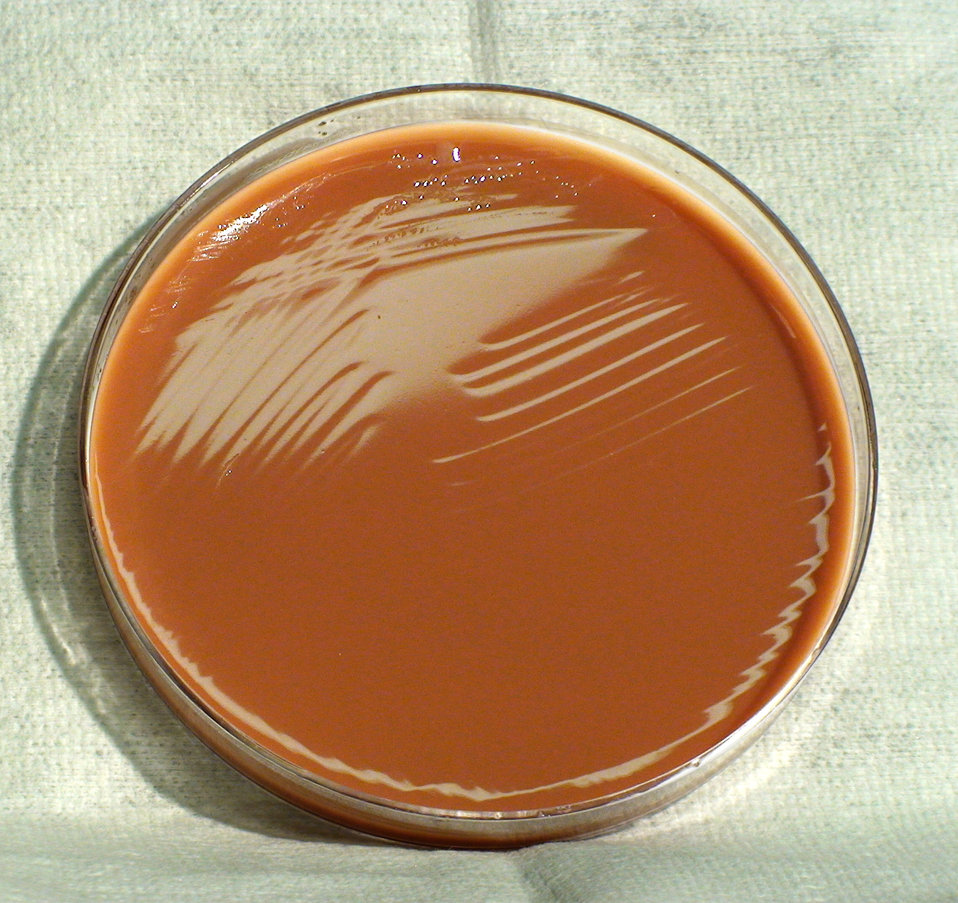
This photograph depicts the colonial morphology displayed by Gram-negative Francisella tularensis bacteria, which was grown on a medium of modified Thayer-Martin (MTM) agar, for a 24 hour time period, at a temperature of 37�C. See PHIL 12445, for a closer view of these bacterial colonies. Take a look at PHIL 12446, which depicts the appearance of F. tularensis colonies grown on the same medium, and at the same temperature, but for twice the time (48hr). Also see PHIL 12447, for the appearance of bacterial colonies, again, grown on the same medium, and at the same temperature, but for three times the time period (72hr). This bacterium is both an animal, and a human pathogen, and is responsible for causing the disease known as tularemia.